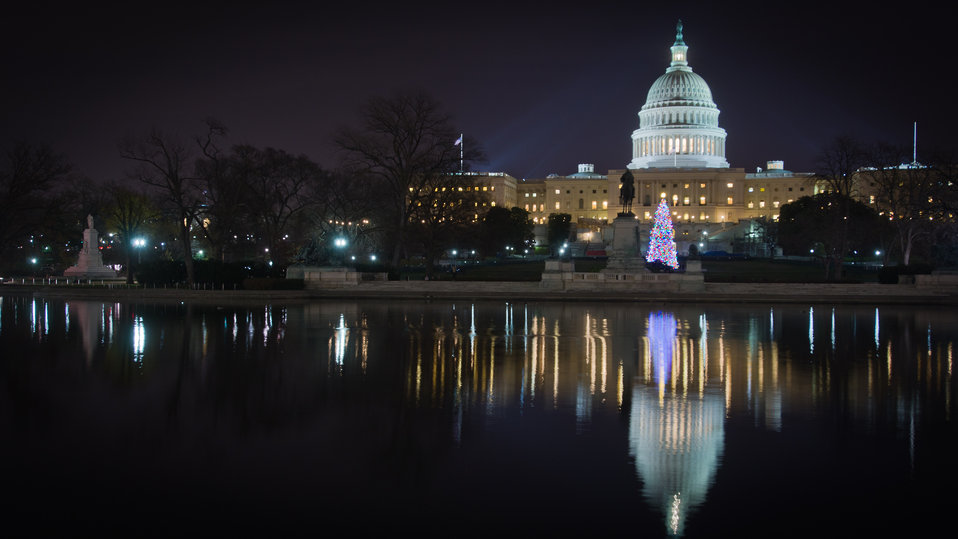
The lighted 2012 U.S. Capitol Christmas Tree from the Blanco Ranger District of the White River National Forest near Meeker, Colorado; and decorated with hand-made ornaments, continued to draw visitors to the Capitol grounds, shortly after it was turned on, on Tuesday, Dec. 4, 2012. Since November, the tree visited dozens of cities across the country as it made its way here on Nov.26, 2012. The 73-foot Englemann spruce traveled from the White River National Forest in Colorado.